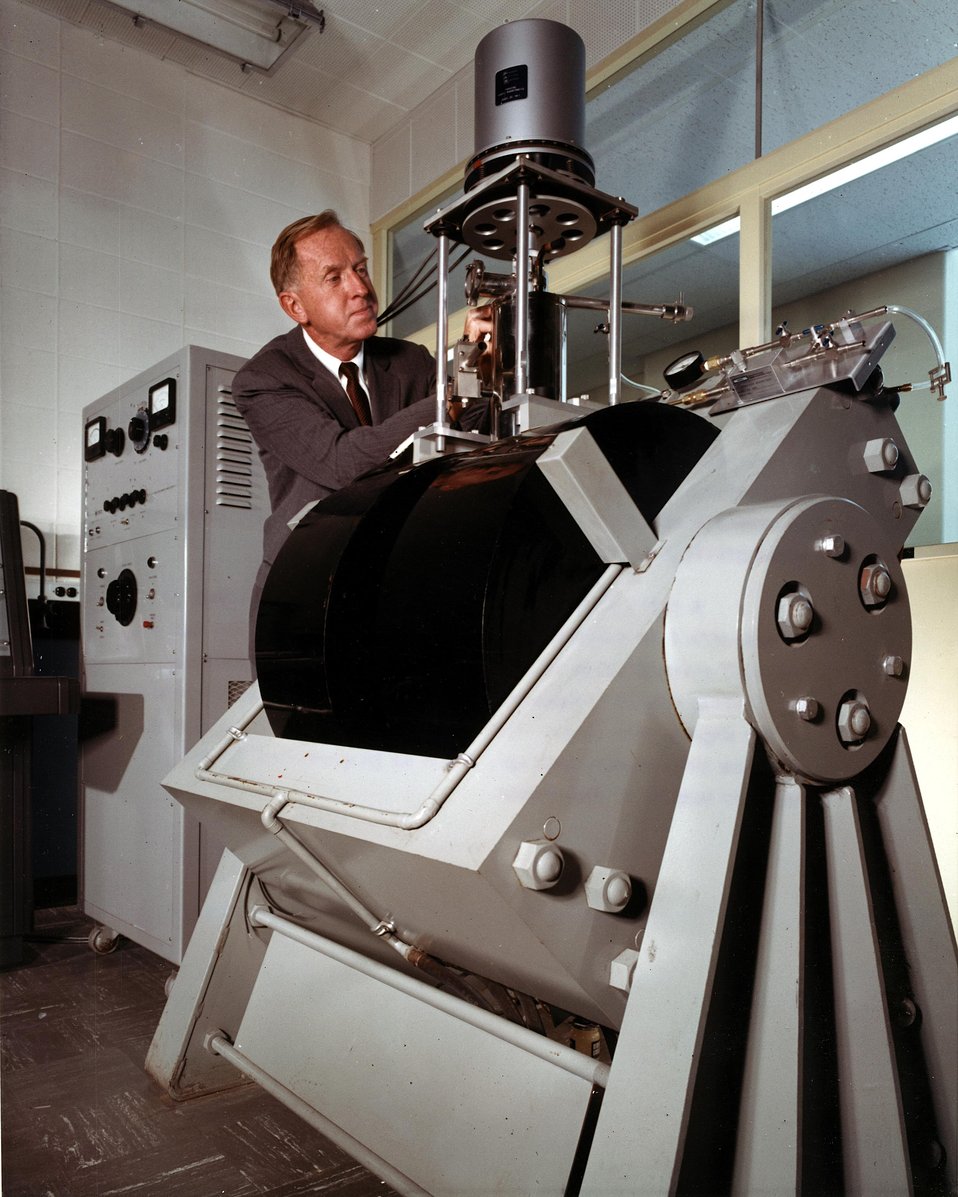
A vibrating sample magnetometer is being used to measure the magnetic moments of solids. This type of measurement is part of a general program to study and interpret the magnetic properties of crystals by neutron diffraction, electron spin, and magnetic susceptibility measurements.